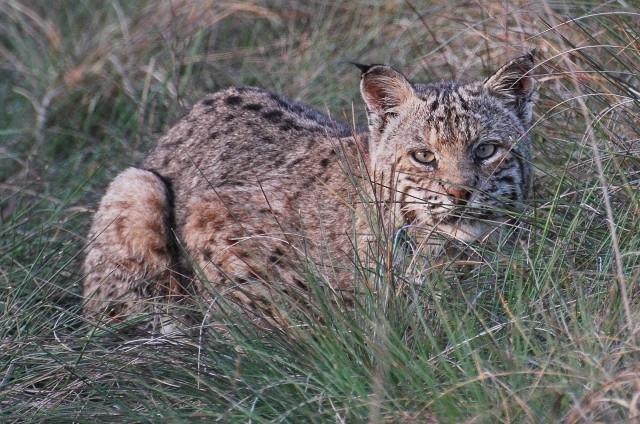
Bobcat lying low.